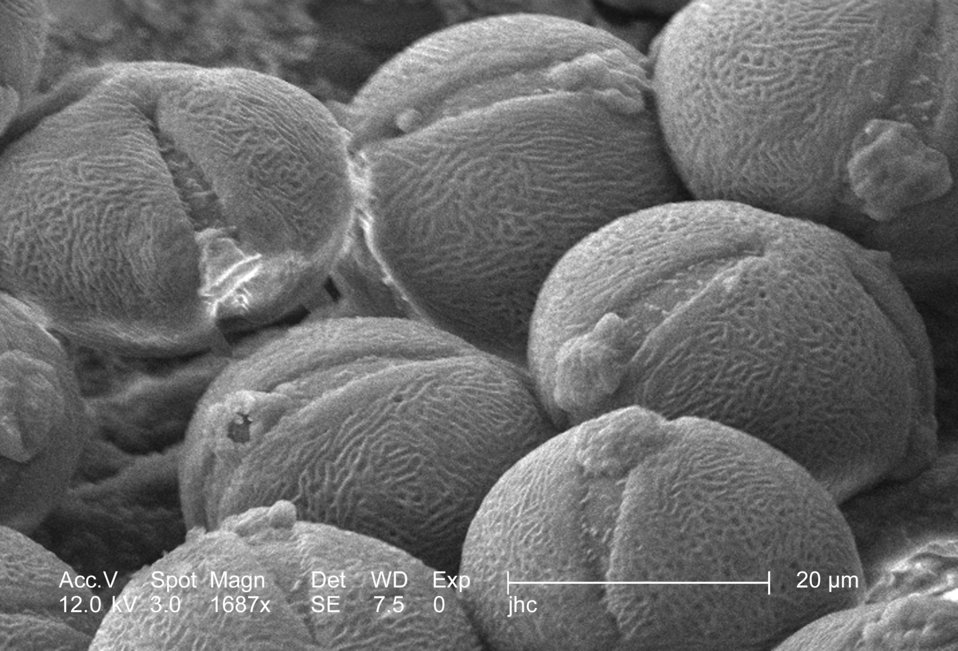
Under a moderately high magnification of 1687x, this scanning electron micrograph (SEM) revealed some of the morphologic ultrastructure found amongst a collection of pollen found within the dehisced, or split open, anther of a yellow "Fireworks" sundrops, Oenothera fruticosa flower. The circular shape of these grains means that they still need to further dry before they are ready to be dispersed. The drying will also change their morphology, whereupon, the grains will become elliptical, or "football"-shaped.